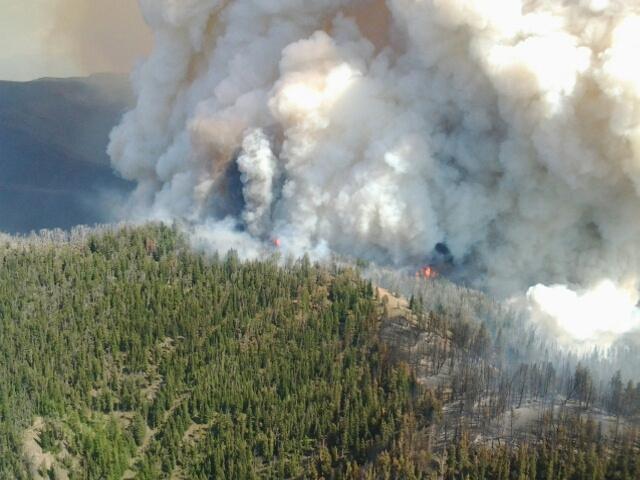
The Miner Paradise Complex Fire in the Gallatin National Forest consists of three fires near Livingston, Gardiner, and Gallatin, MT began on Aug. 16, 2013 by lightning and has consumed approximately 11,658 acres and is 15% contained.